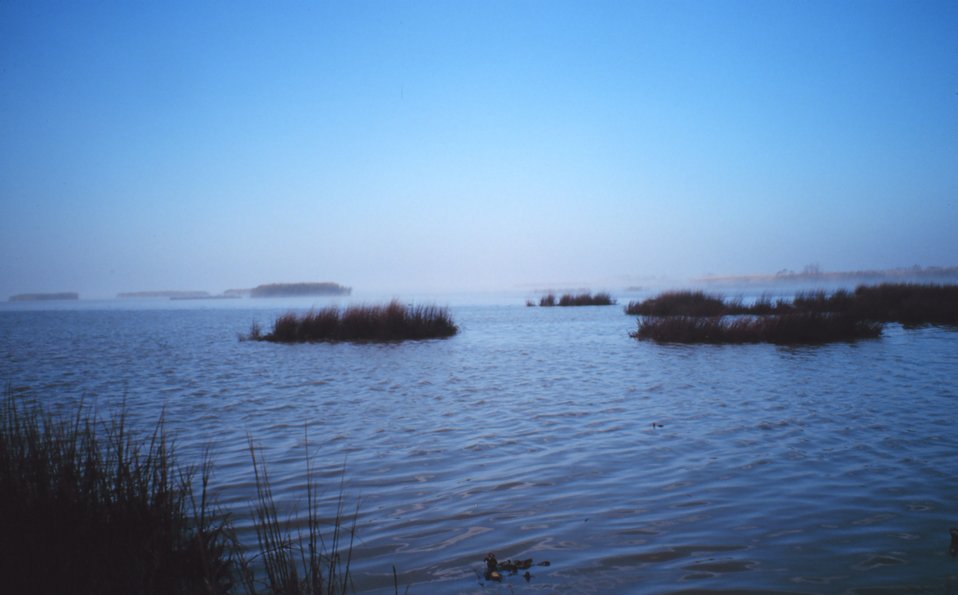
View from delta splay along Southwest Pass towards islands composed of Phragmites, an exotic species commonly called roseau cane.